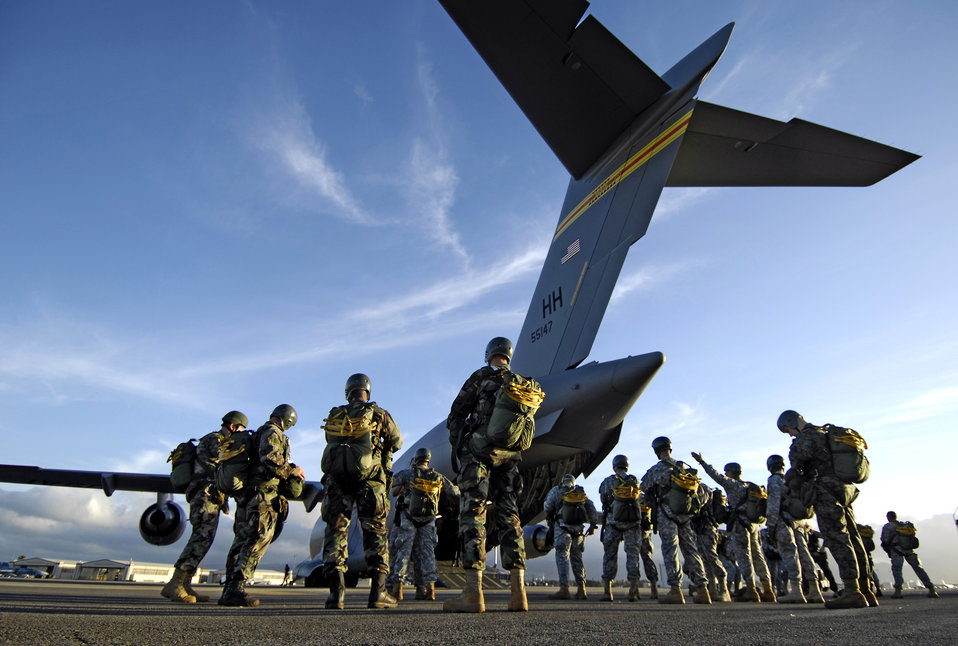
Let's go jump

Members from Special Operations Command-Pacific prepare to board a C-17 Globemaster III Feb. 11 at Hickam Air Force Base, Hawaii. The aircrew flying the C-17, from the 535th Airlift Squadron there, is helping the SOCPAC troops conduct their jump currency training,